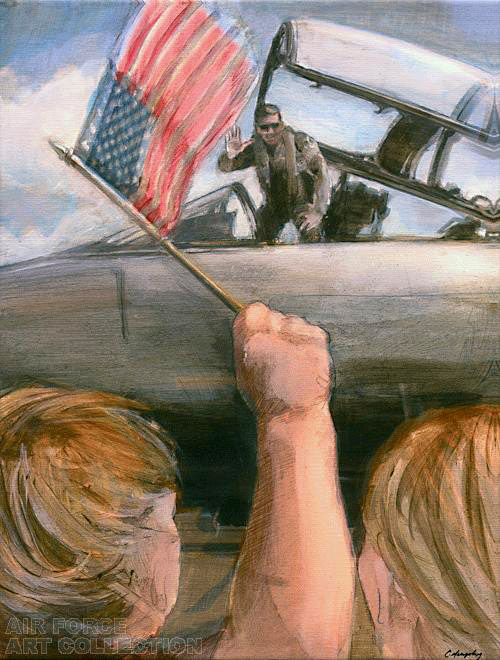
Artists document Rodeo competition

This art piece in the Air Force art collection entitled,